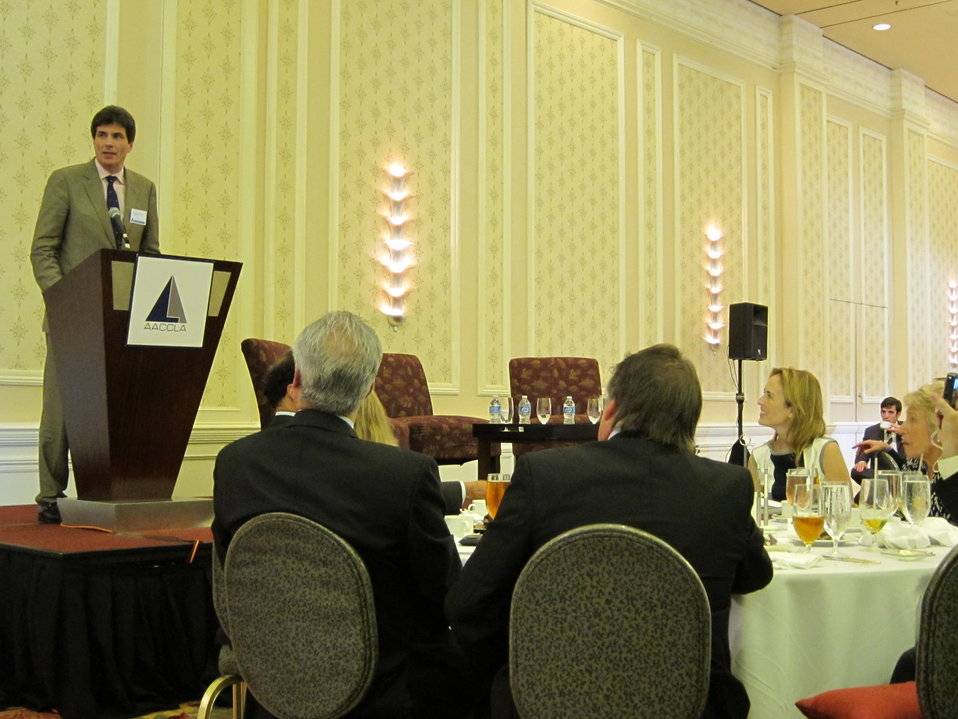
Assistant Secretary Fernandez Discusses the Administration's Focus on Latin America

Assistant Secretary for Economic, Energy and Business Affairs Jose W. Fernandez delivers remarks at the Association of American Chambers of Commerce in Latin America “Outlook on the Americas” luncheon at the Intercontinental Hotel in Miami, Florida, on February 3, 2011.